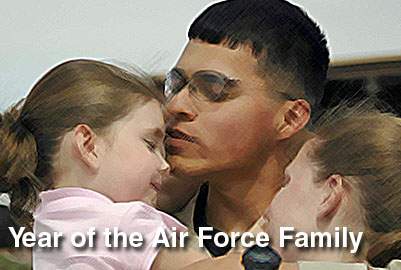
Military families gain access to free, online tutoring

Defense Department officials launched a free, online tutoring service for servicemembers and their families.